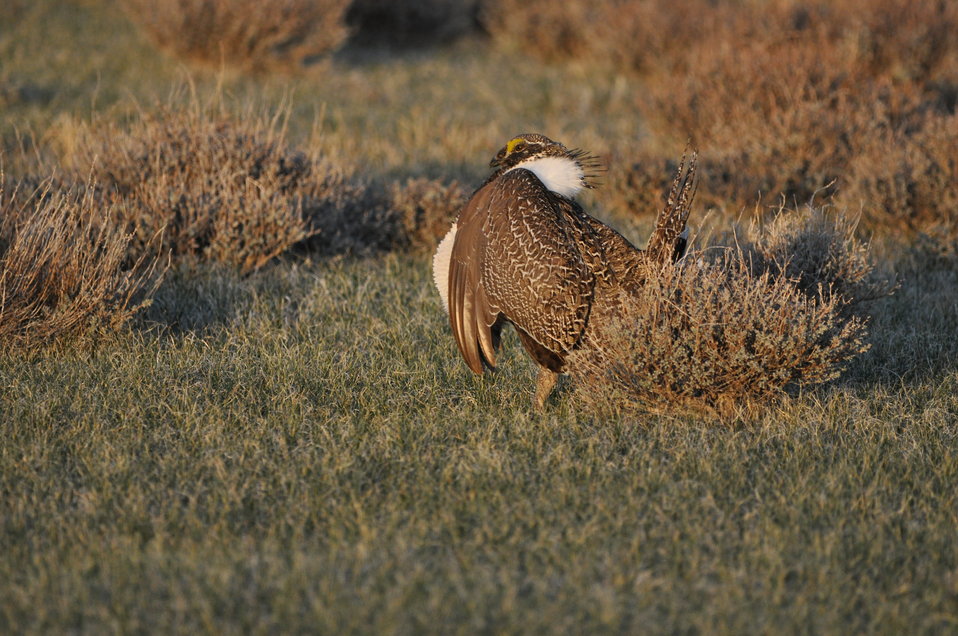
Greater Sage-Grouse

Photo Credit: Jeannie Stafford/USFWS
A greater sage-grouse male struts at a lek (dancing or mating ground) near Bridgeport, CA to attract a mate.